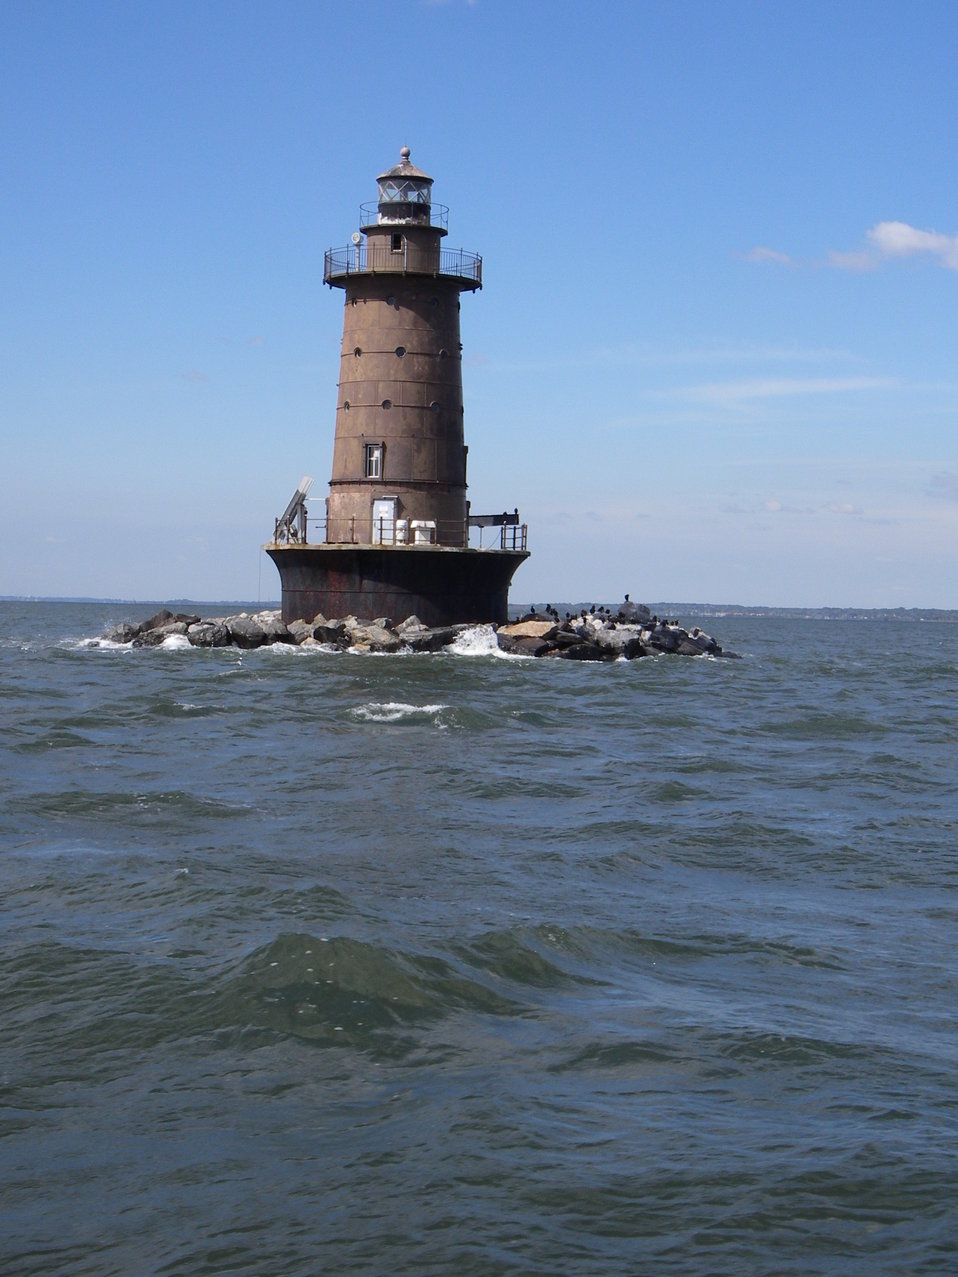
West Bank Range Front Light, Ambrose Channel, New York Harbor.